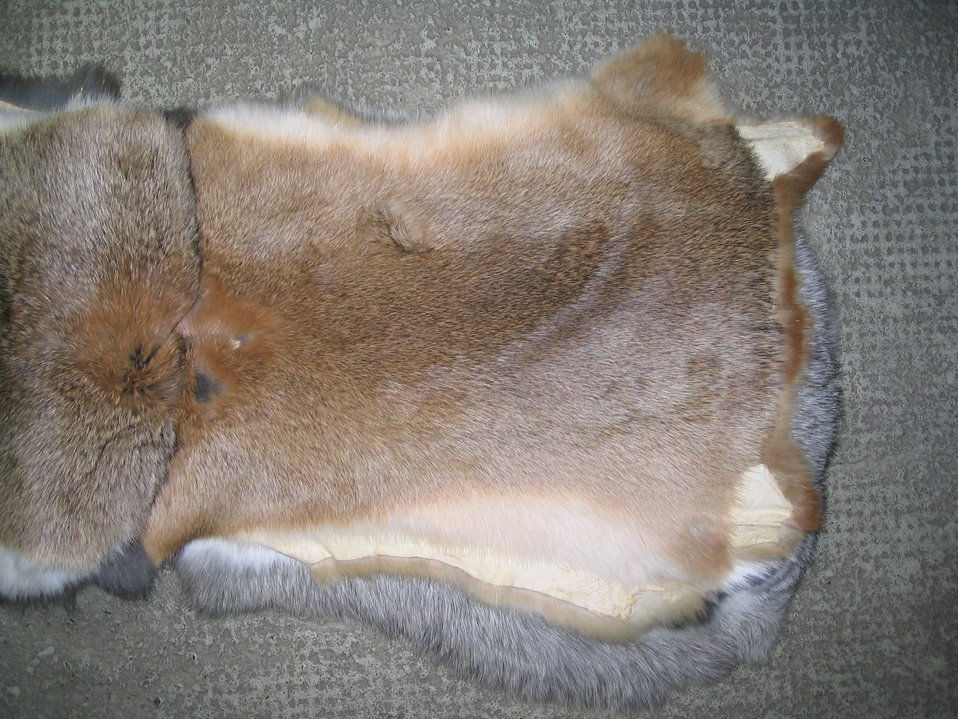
Deutsch: Hauskaninchenfelle „hasengrau rötlich“.
Gesehen beim Rauchwarenhändler Wolfgang Czech (geb. 1931), in 2. Generation Spezialist für Kaninfelle, Frankfurt/Main, Niddastraße.
Domestic rabbit fur skins, haregrey reddish